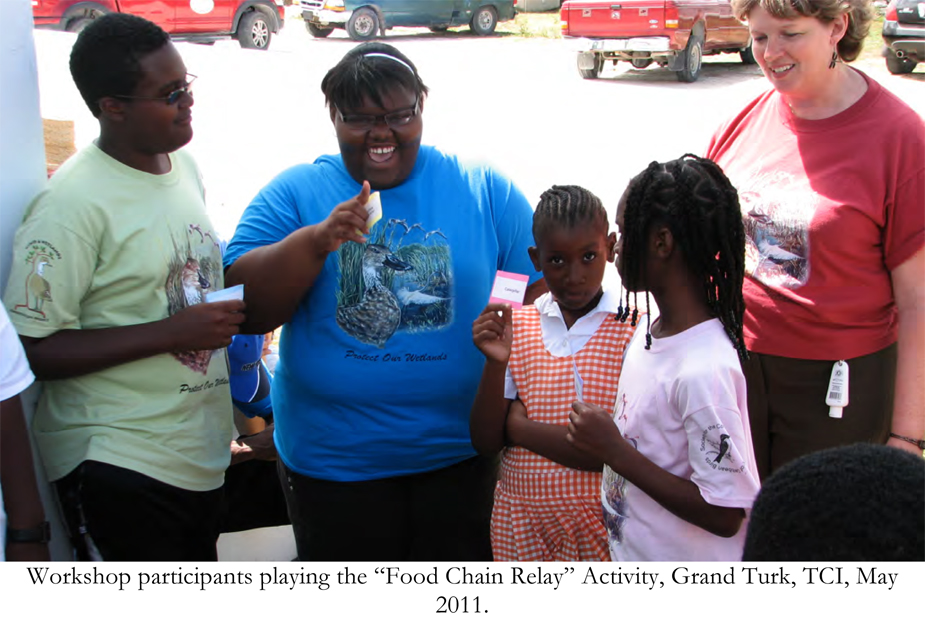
SCSCB-FWS-Interim-Report-2011